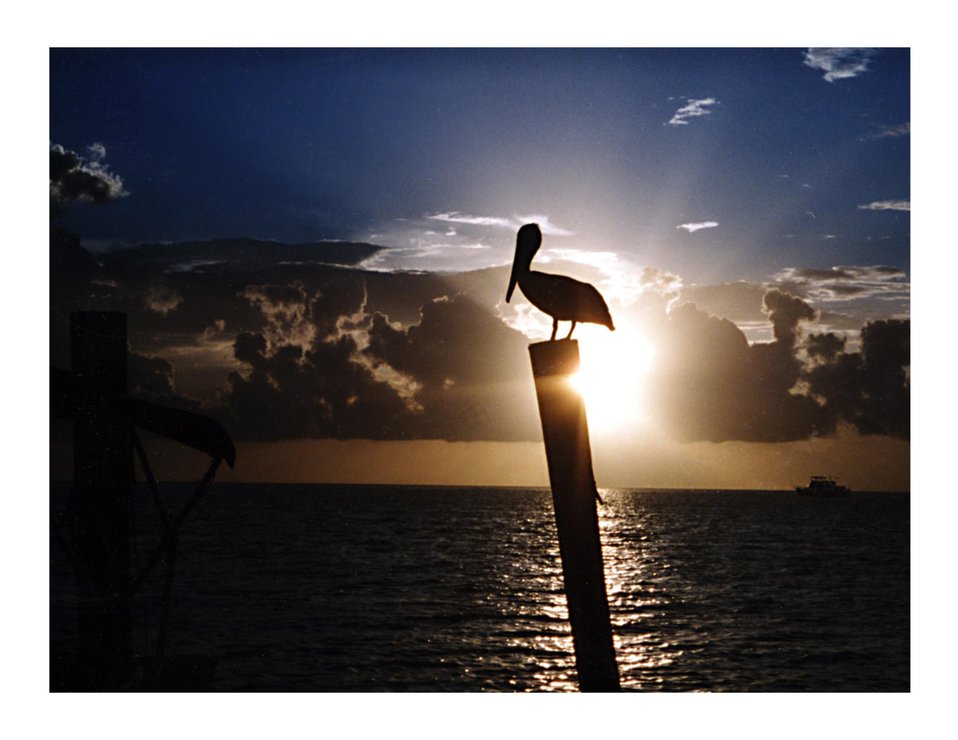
Pelican silhouette at setting sun, Louisiana Credit: Lael Butler